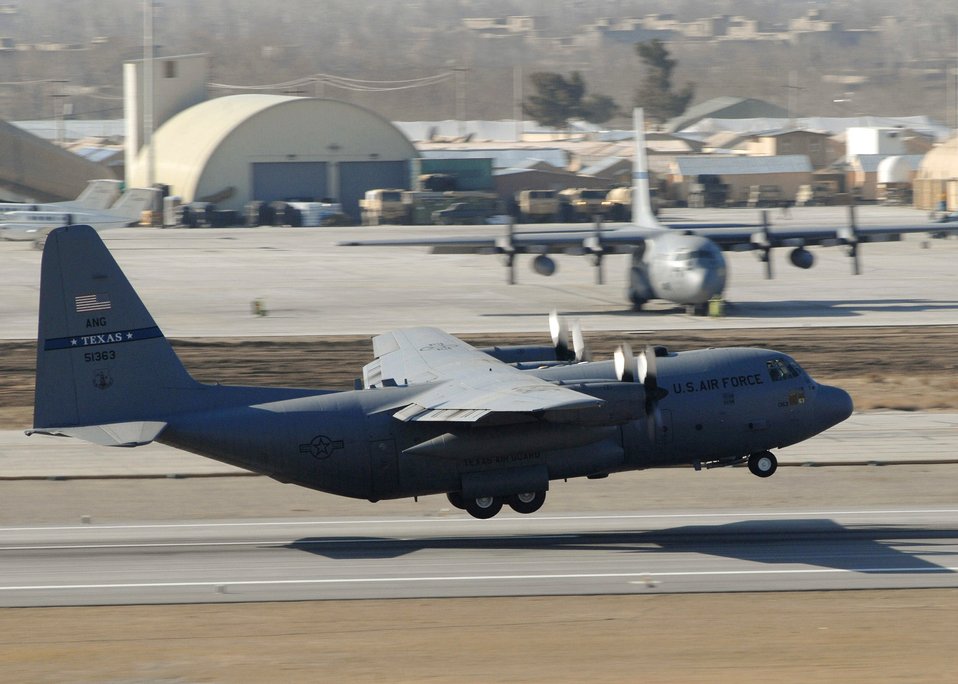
Up and away

A Texas Air National Guard C-130 Hercules takes off Feb. 24 from Bagram Air Base, Afghanistan, on a mission supporting Operation Enduring Freedom. The C-130s and crews from the 774th Expeditionary Airlift Squadron are integral to operations throughout the region.